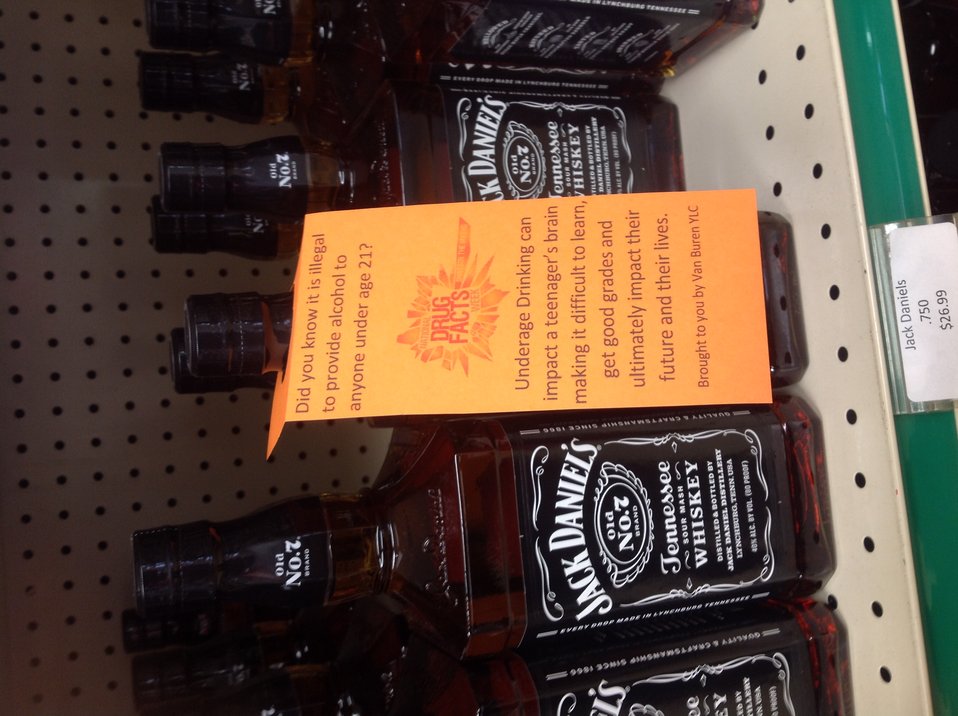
Making a Statement

Teenagers from the Van Buren County SAFE Coalition's, Youth Leadership Council (YLC) in Keosauqua, Iowa participate in various events during National Drug Facts Week, 2014.